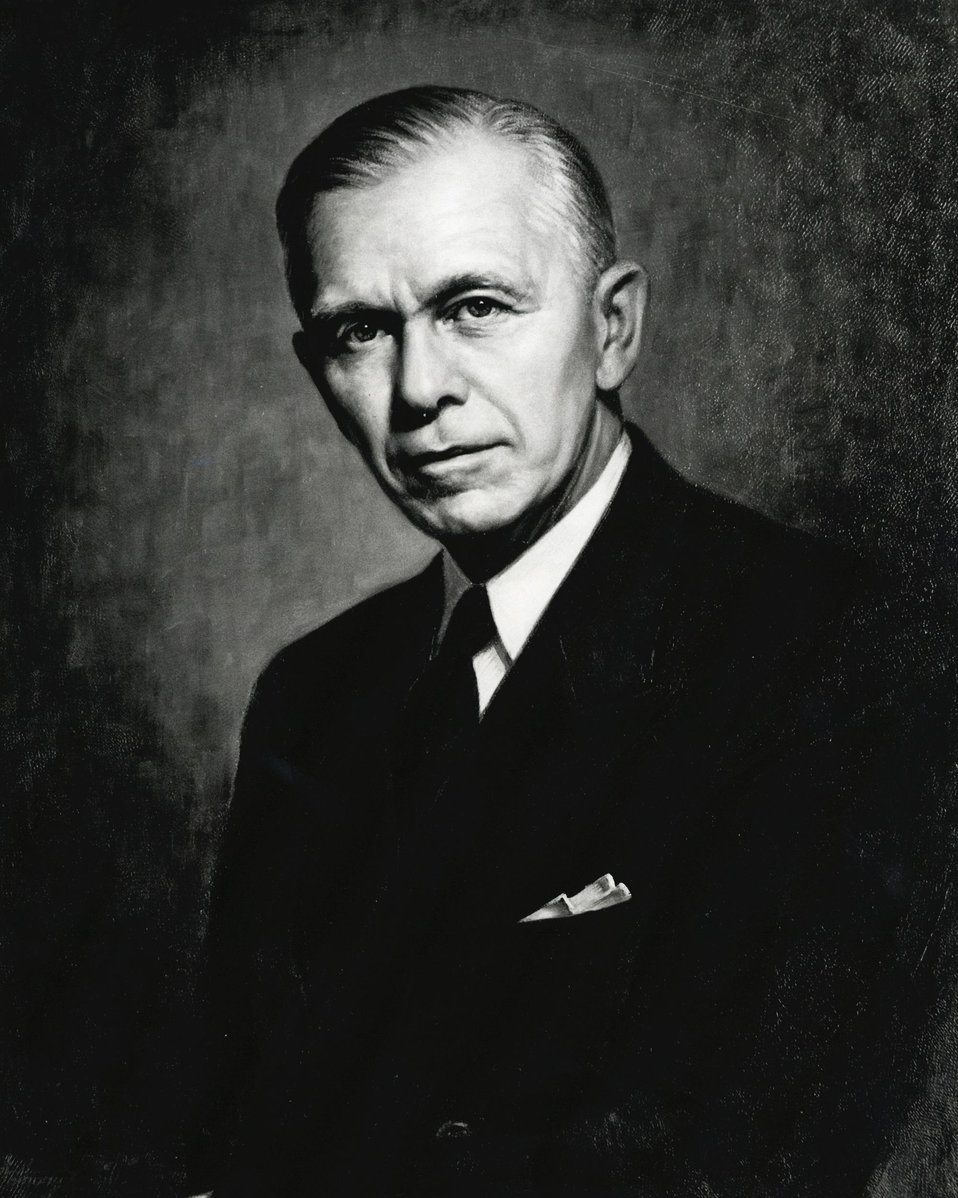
George C. Marshall, U.S. Secretary of State, January 21, 1947 to January 20, 1949